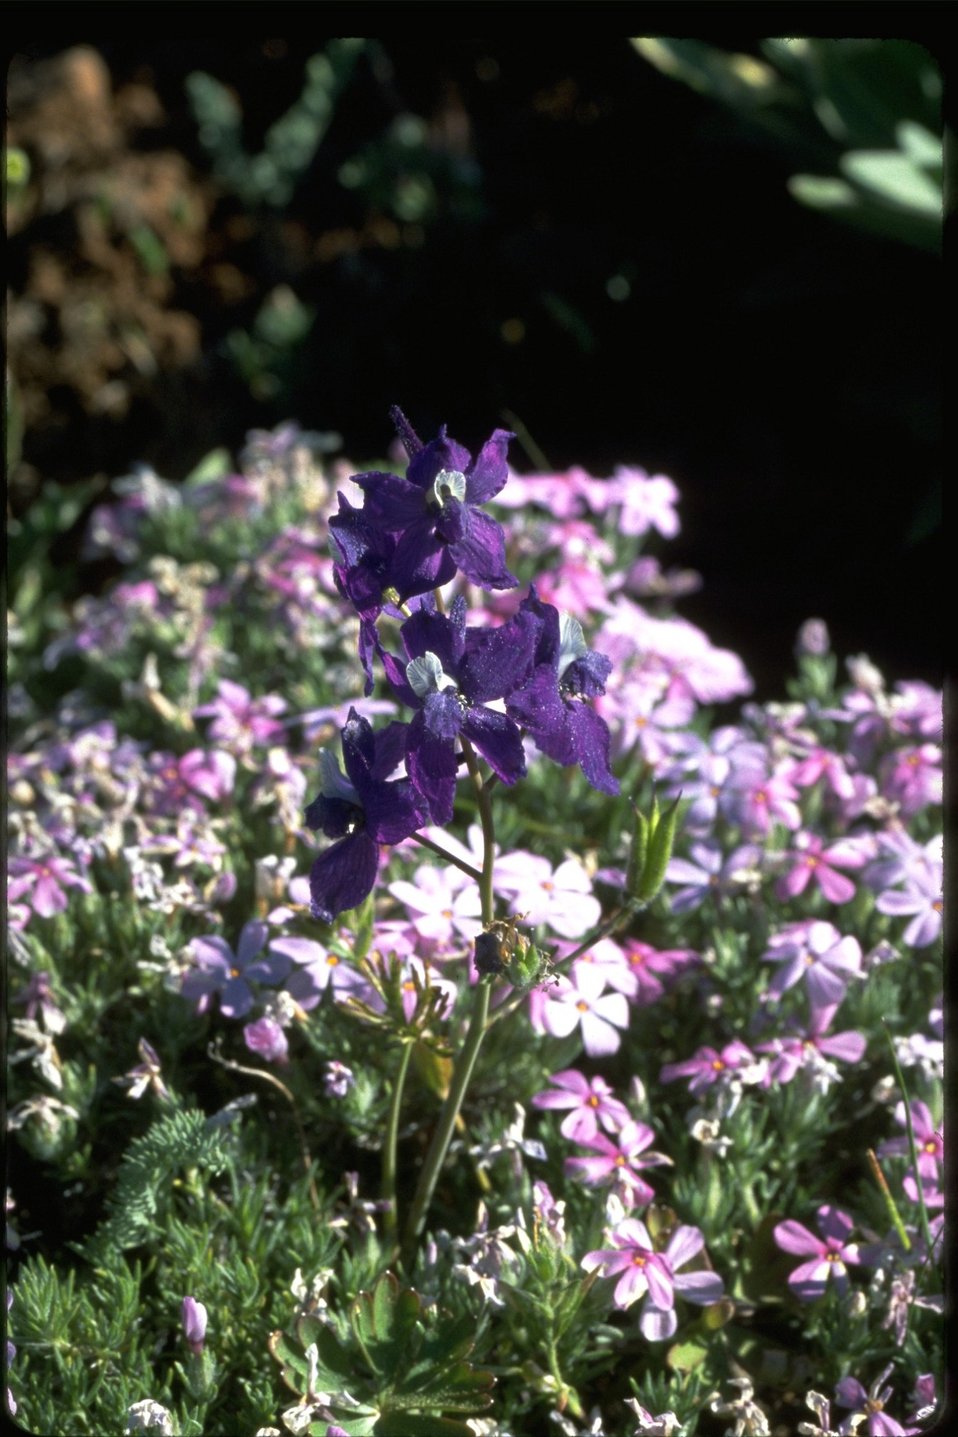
Medium shot of delphinium/Larkspur with phlox wildflowers.